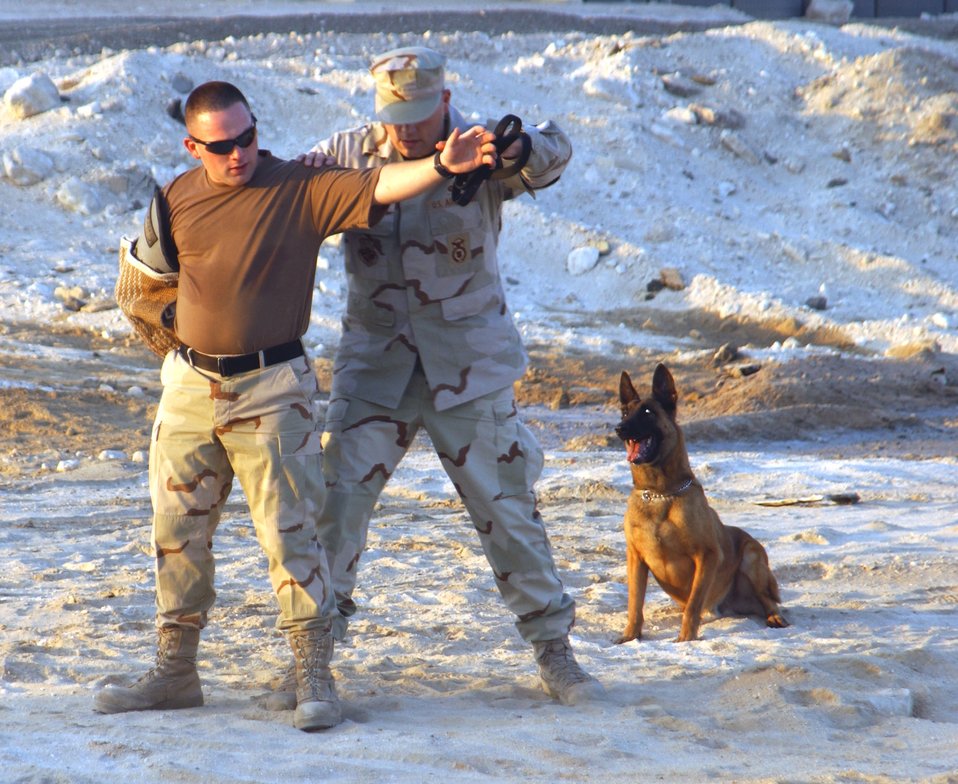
Stand perfectly still...

Senior Airman Alexander Colon is searched by Tech. Sgt. Keith Crowder while Endy stands by to assist during a military working dog demonstration Oct. 21. Airman Colon, Sergeant Crowder and Endy are assigned to the 380th Expeditionary Security Forces Squadron at this deployed location in Southwest Asia where working dog teams provide security for the largest air refueling fleet in the theater.